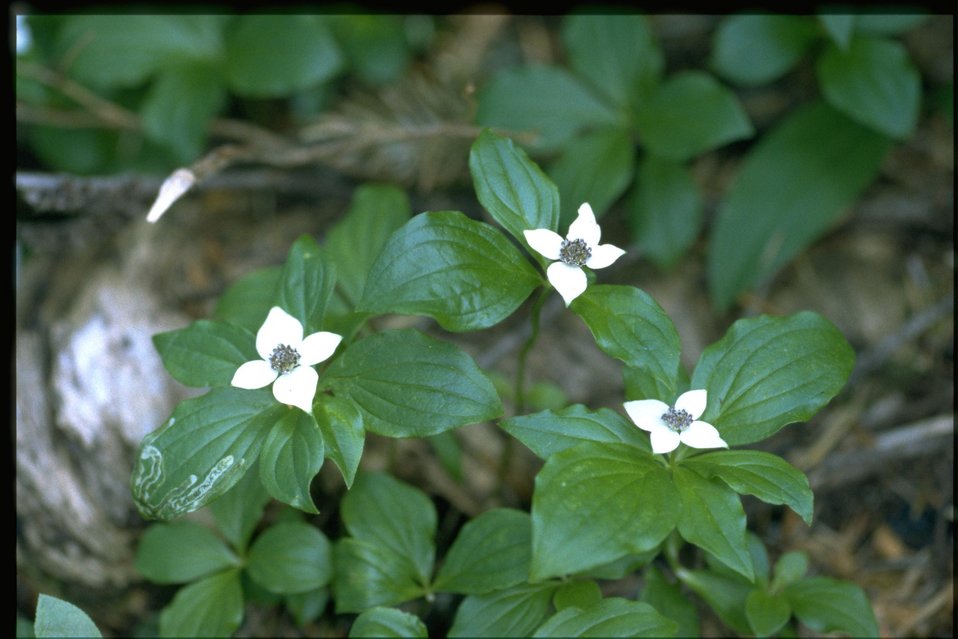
Medium shot of Cornus canadensis.